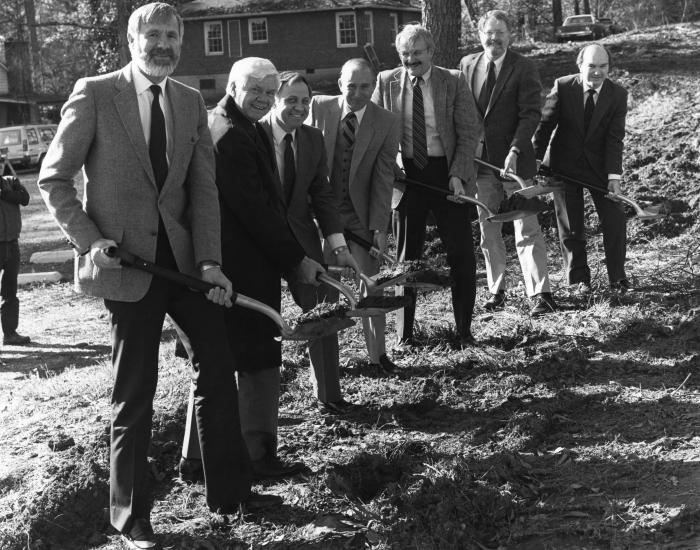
This photograph, taken in 1985, showed Centers for Disease Control executives holding shovels, while they participated in the ground-breaking ceremony of the CDC's newest virology laboratory located on the organization's Clifton Road, Roybal Campus in Atlanta, Georgia.